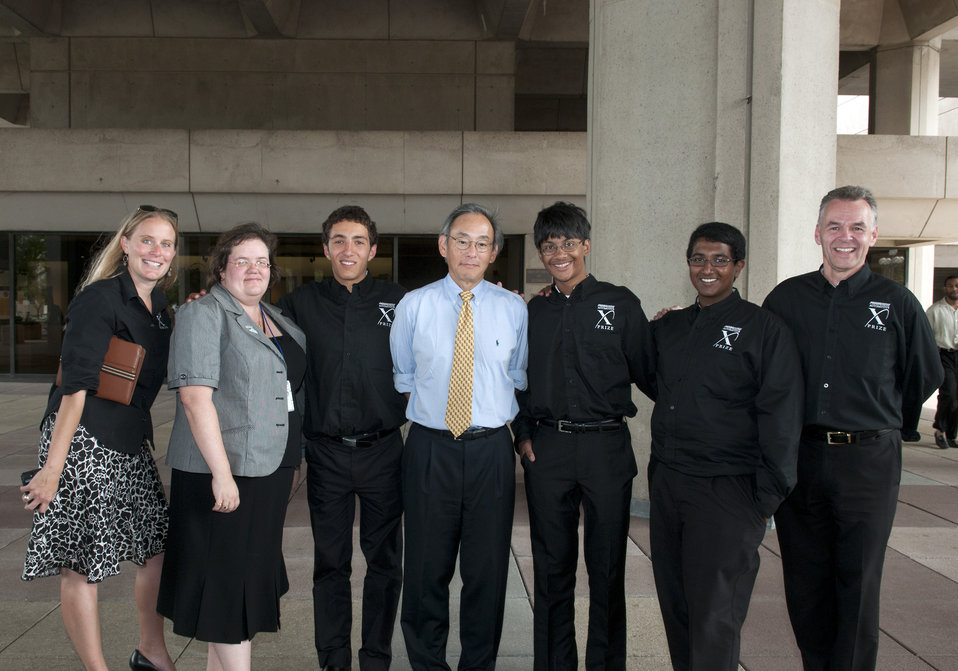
DSC 3633 edit